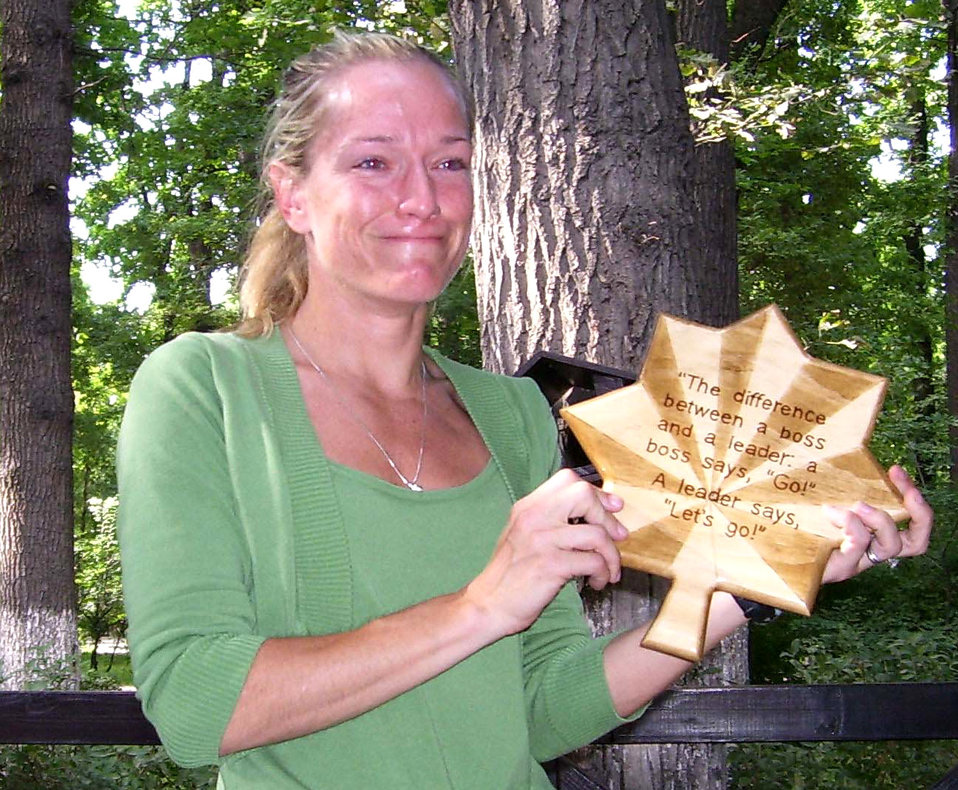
Air Force major still missing in Kyrgyzstan

Maj. Jill Metzger, a personnel officer at the 376th Air Expeditionary Wing at Manas Air Base, Kyrgyzstan, has been missing since her visit to a Bishkek shopping center Sept. 5.